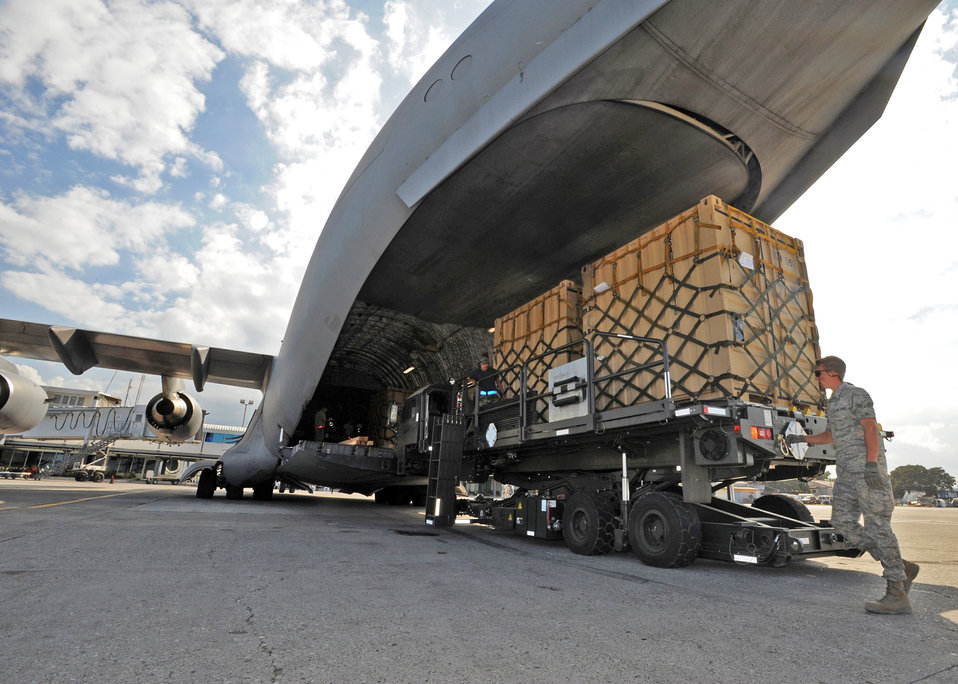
Elmendorf Airmen deliver relief supplies to Haiti

Cargo pallets are removed from a C-17 Globemaster III Jan. 31, 2010, at Port-Au-Prince, Haiti. The C-17 delivered Soldiers, a truck with water tank, and pallets of gear to be used in the Haiti relief effort.